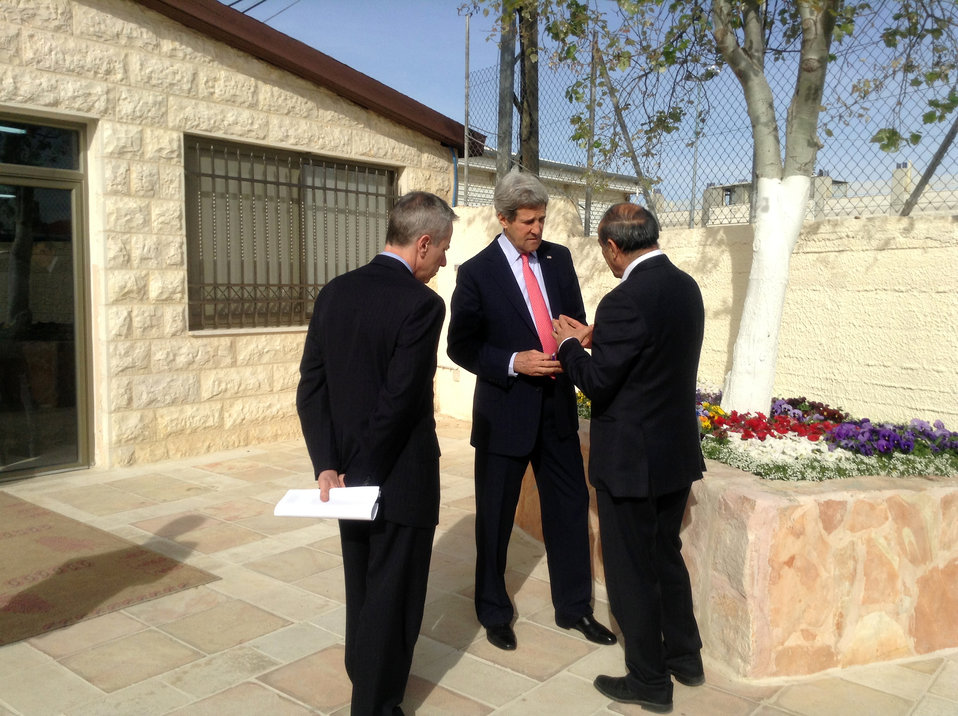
Secretary Kerry at the Al Bireh Youth Center in the West Bank

U.S. Secretary of State John Kerry speaks with U.S. Consul General Michael Ratney and Al Bireh Youth Center Chairman of the Board Dr. Samih Al Abed at the youth center in the West Bank, March 21, 2013.